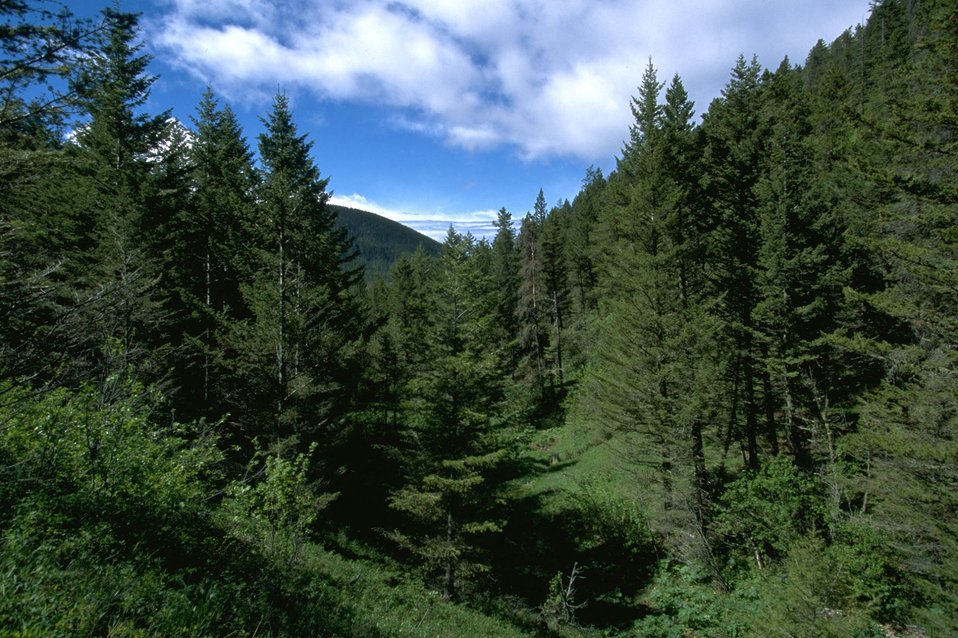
View of a variety of trees in the Judith Mountains